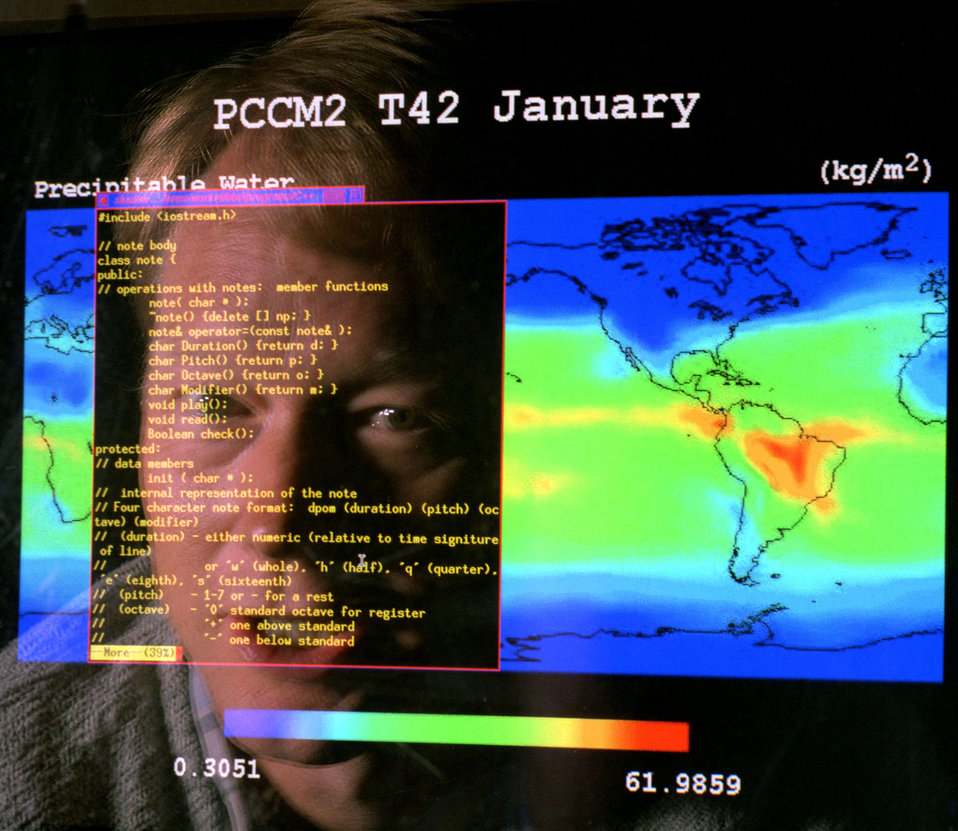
Researcher in Oak Ridge

An Oak Ridge National Laboratory researcher studies changes in the global climate.